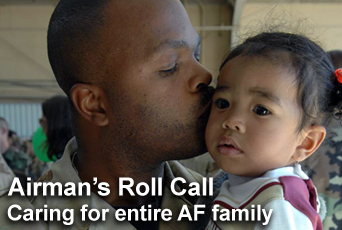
Airman's Roll Call

This week's Airman's Roll Call focuses on taking care of the whole Air Force family, which includes Airmen's families, wingmen, subordinates and subordinates' families.